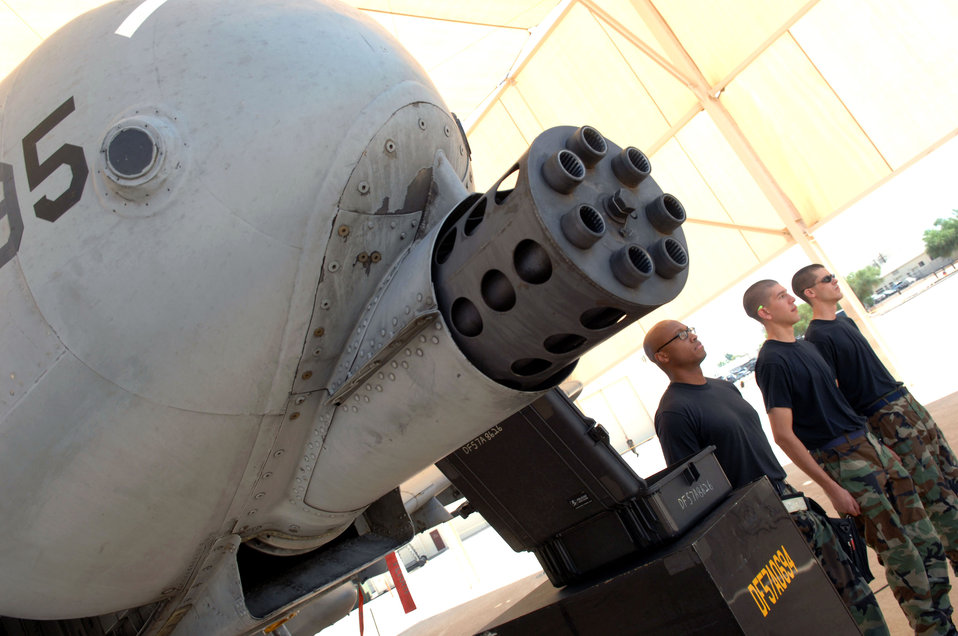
Load crew competition

Staff Sgt. Roland Harvey, Airman 1st Class Brandon Hackney and Airman 1st Class Mark Robinson wait for the signal to begin the quarterly load crew competition July 20 at Davis-Monthan Air Force Base, Ariz. The event is used to boost group morale while enhancing warfighting skills. The Airmen are assigned to the 355th Maintenance Squadron.